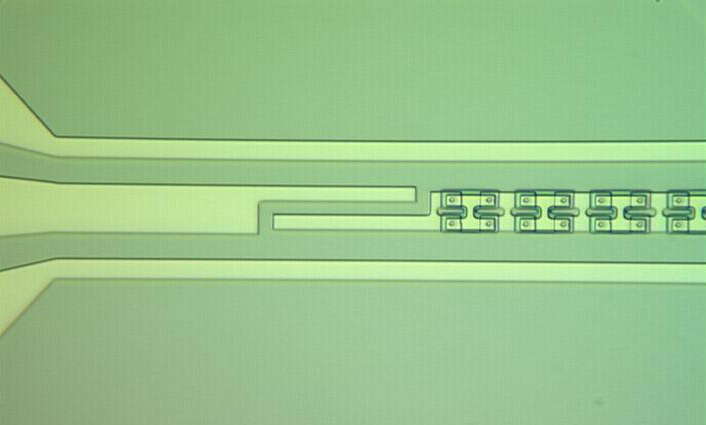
Noiseless Amplifier

In the JILA/NIST 'noiseless' amplifier a long line of superconducting magnetic sensors (beginning on the right in this colorized micrograph) made of sandwiches of two layers of superconducting niobium with aluminum oxide in between, creates a 'metamaterial' that selectively amplifies microwaves based on their amplitude rather than frequency or phase.